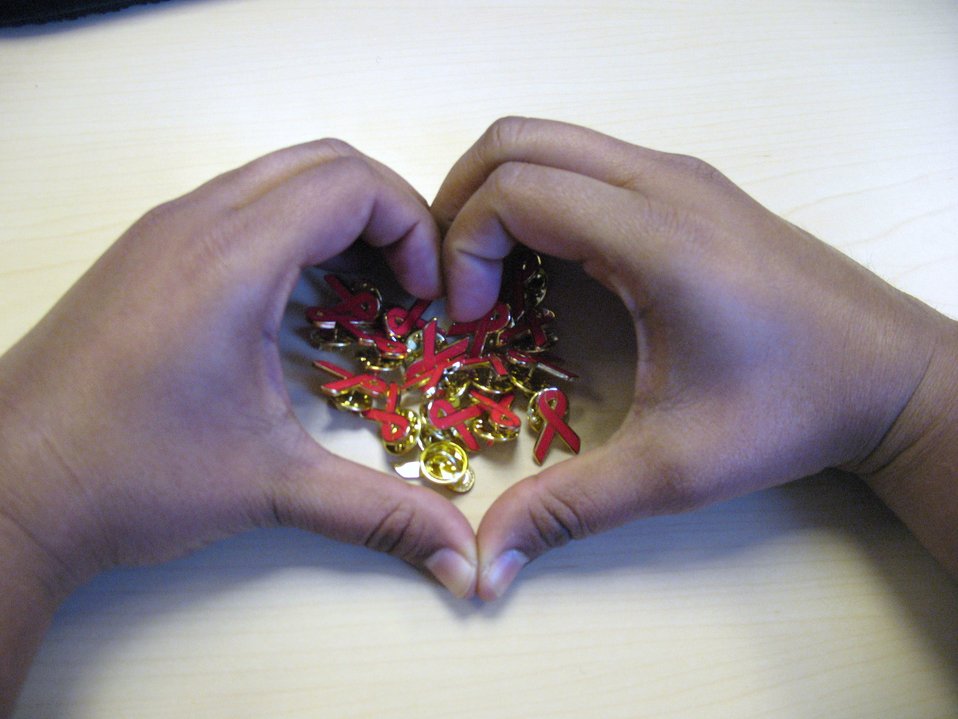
TM